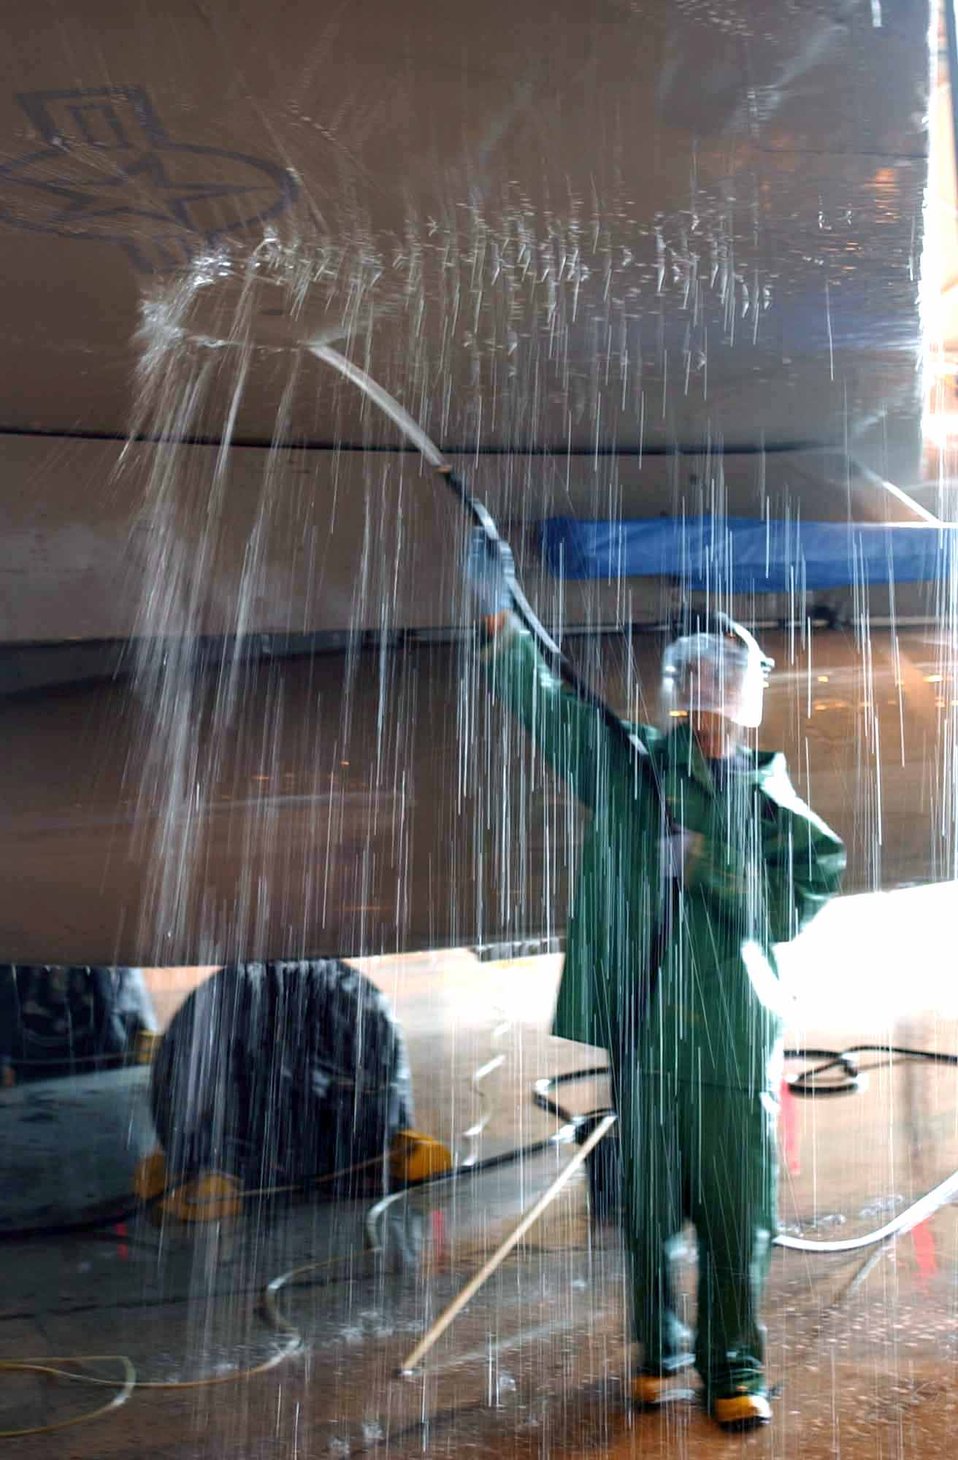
It's a wash

ELMENDORF AIR FORCE BASE, Alaska -- Airman 1st Class Errion Zanders washes an F-15 Eagle from the 19th Fighter Squadron here during Northern Edge '04. About 9,000 Soldiers, Sailors, Airmen, Marines and Coast Guardsmen are serving as part of a joint task force practicing tasks associated with joint operations.